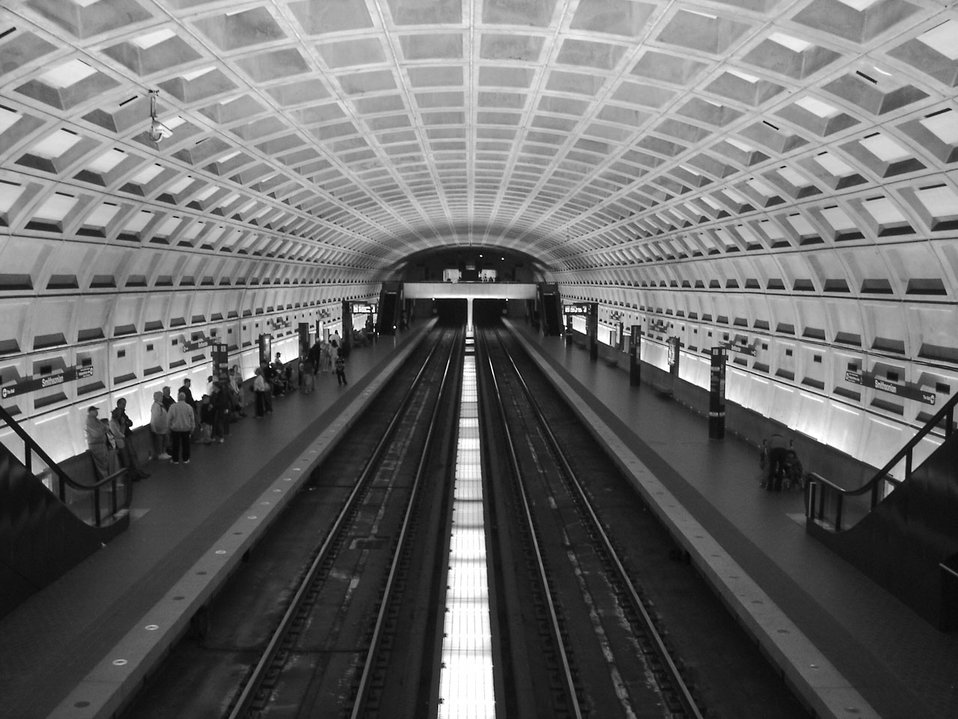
Washington dc metro

Washington dc train station.